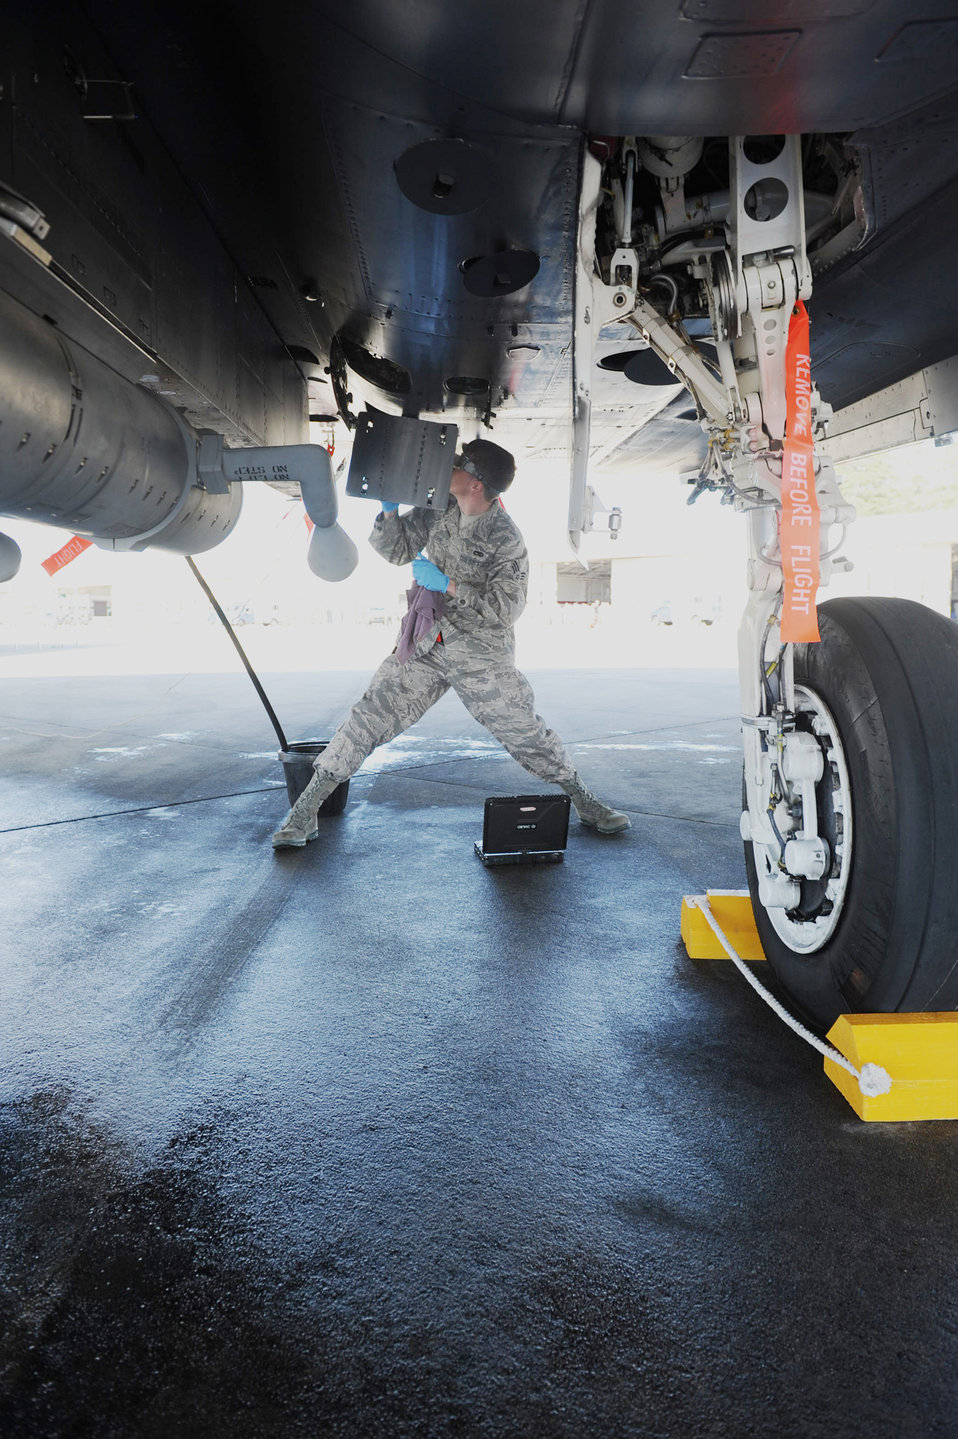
Strike Eagle

Senior Airman Bobby Kerr, a 307th Fighter Squadron crew chief at Seymour Johnson Air Force Base, N.C., conducts a maintenance check on an F-15E Strike Eagle after a flight March 19, 2010. The 307th FS falls under the 414th Fighter Group, a new Air Force Reserve Command unit standing up on Seymour Johnson AFB to support the growing F-15E Strike Eagle mission.